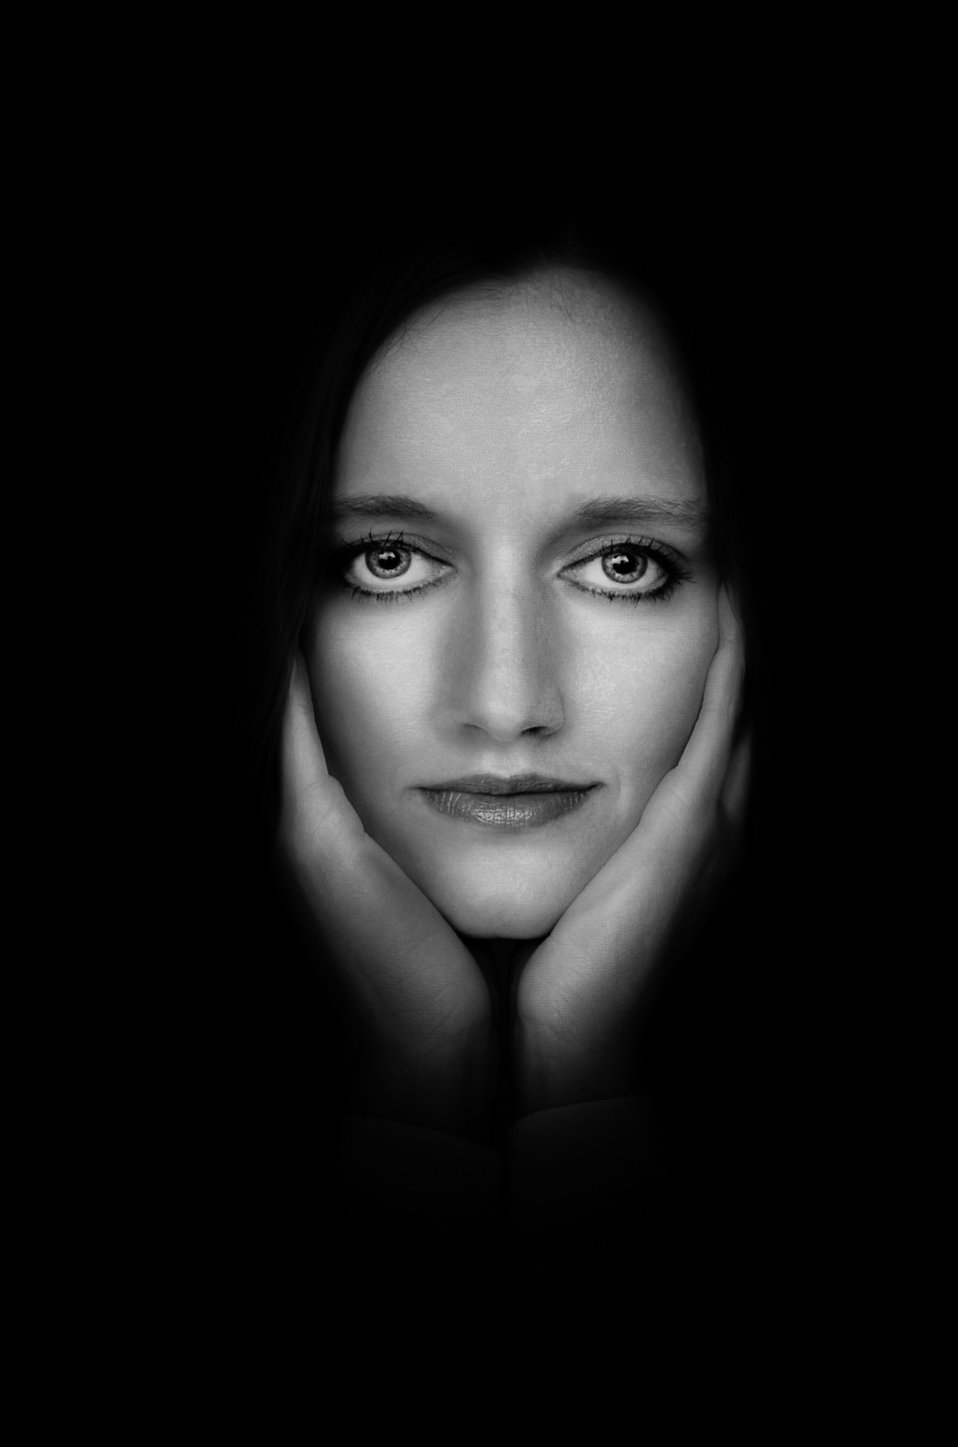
Woman dark face portrait.